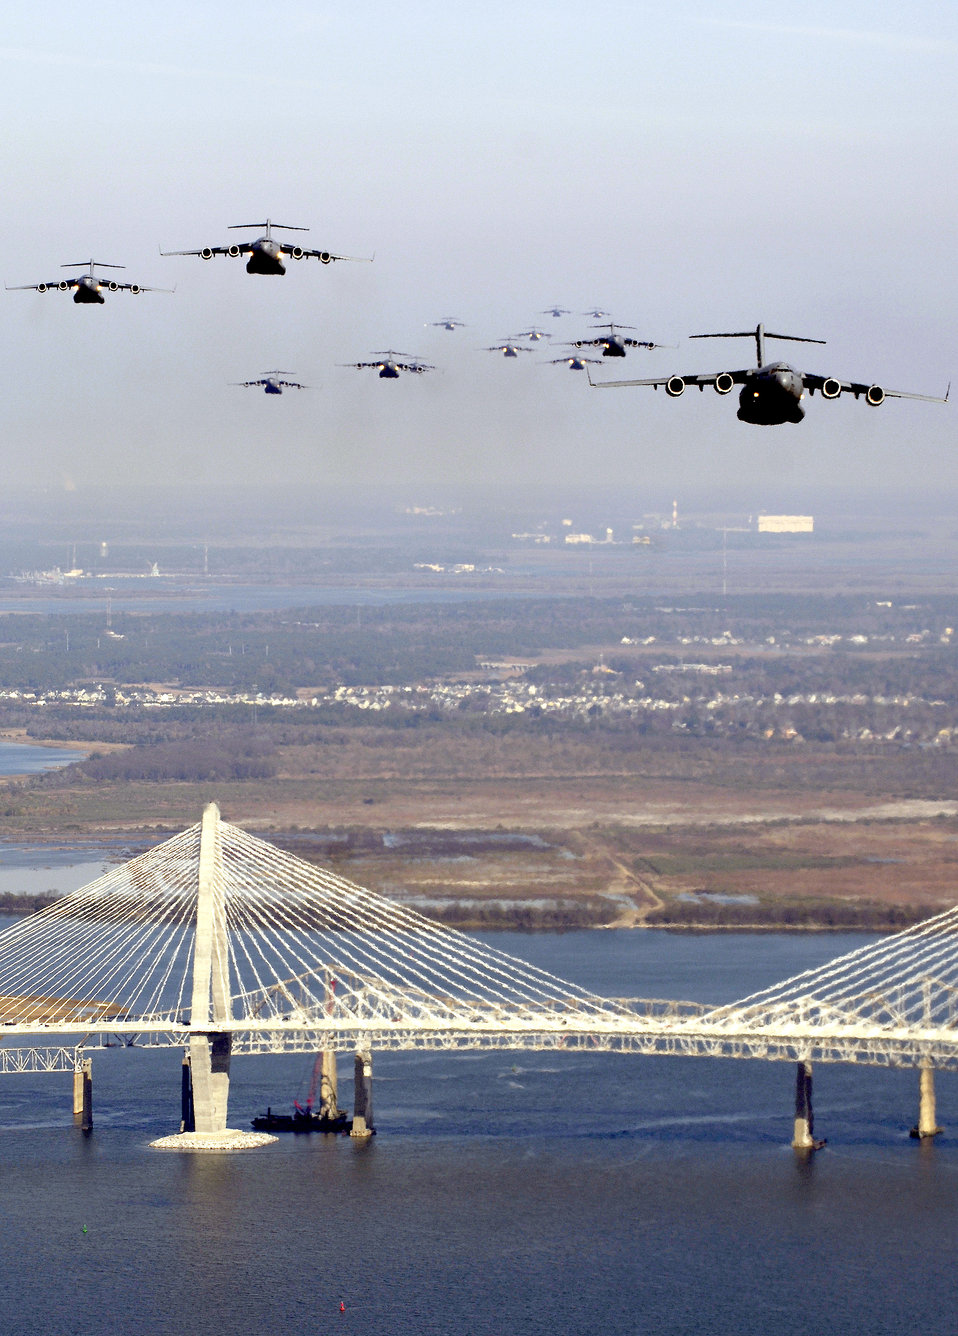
C-17 record breaking flight

CHARLESTON, S.C. (AFPN) -- formation of 17 C-17 Globemaster IIIs fly over the Arthur Ravenel Bridge. The C-17s, assigned to the 437th and 315th Airlift Wings here, were part of the largest formation in history from a single base and demonstrated the strategic airdrop capability of the Air Force.